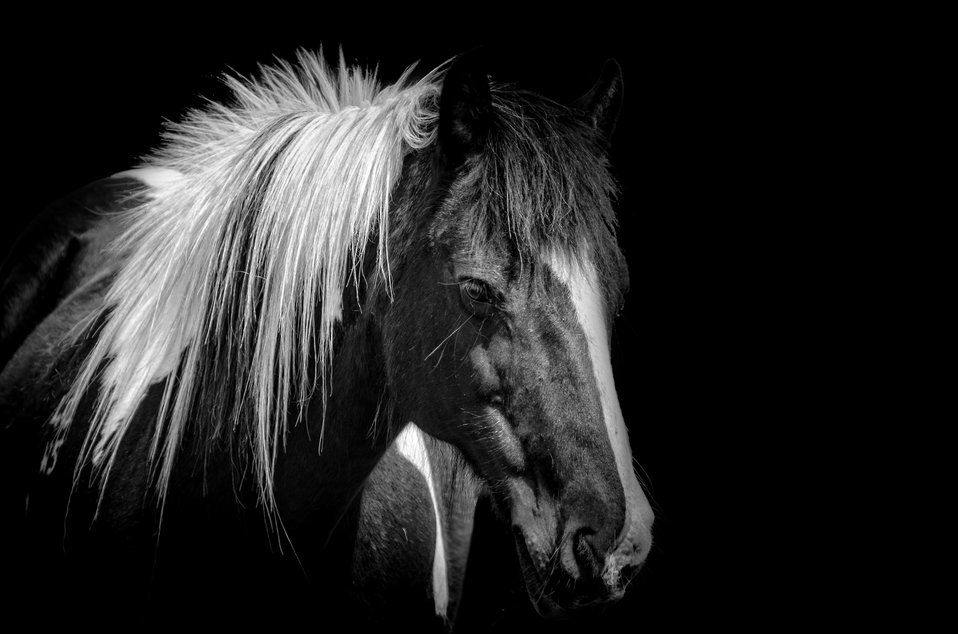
Horse in the shadow.